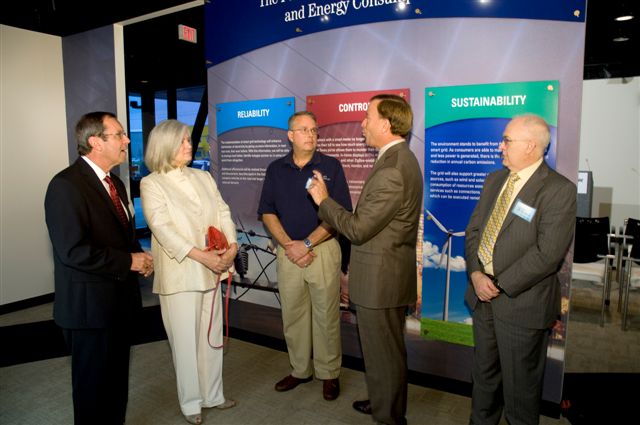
CenterPoint CEO Malcolm Unsworth, Ruth D’Iorio, Craig Funni, CenterPoint VP Kenny Mercado, and Don Macdonald, discuss CenterPoint’s Smart Grid project